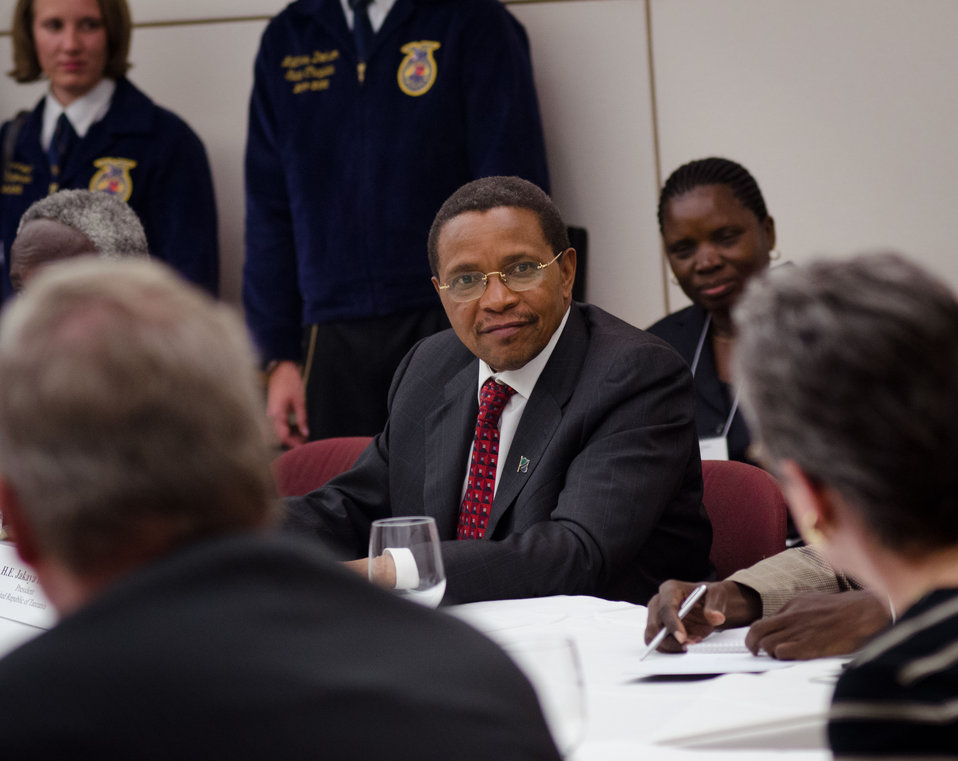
President of the United Republic of Tanzania His Excellency Jakaya Kikwete made comments that Agriculture Secretary Tom Vilsack and Undersecretary, Research Education and Economics Dr. Catherine Woteki took note of, during the African Heads of State conference at the Ronald Reagan Federal Building in Washington, D.C., on Friday, May 18, 2012.